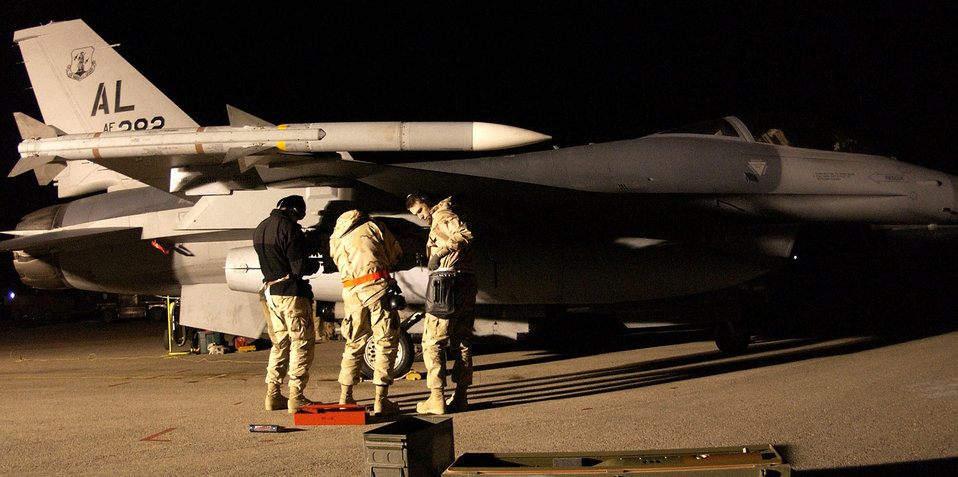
Falcon talons

OPERATION IRAQI FREEDOM -- Weapons loaders afix a guided munition to an F-16 Fighting Falcon at a forward-deployed Operation Iraqi Freedom location.